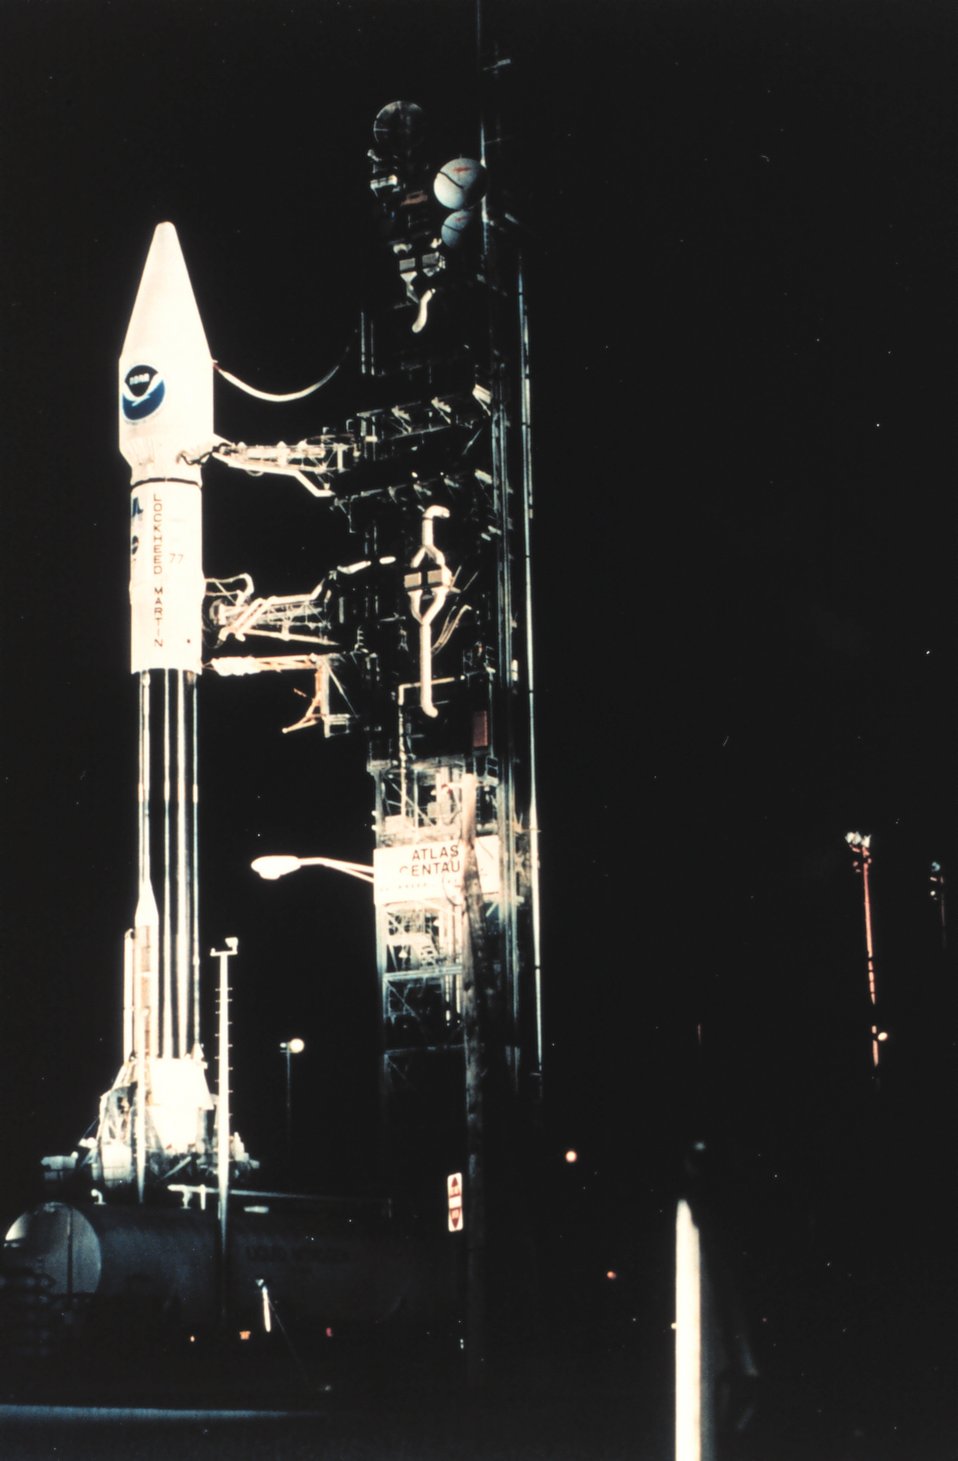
NOAA satellite GOES-J mounted on an Atlas Centaur rocket ready for launch. Satellite was launched on May 23, 1995 and became GOES-9 when operational.